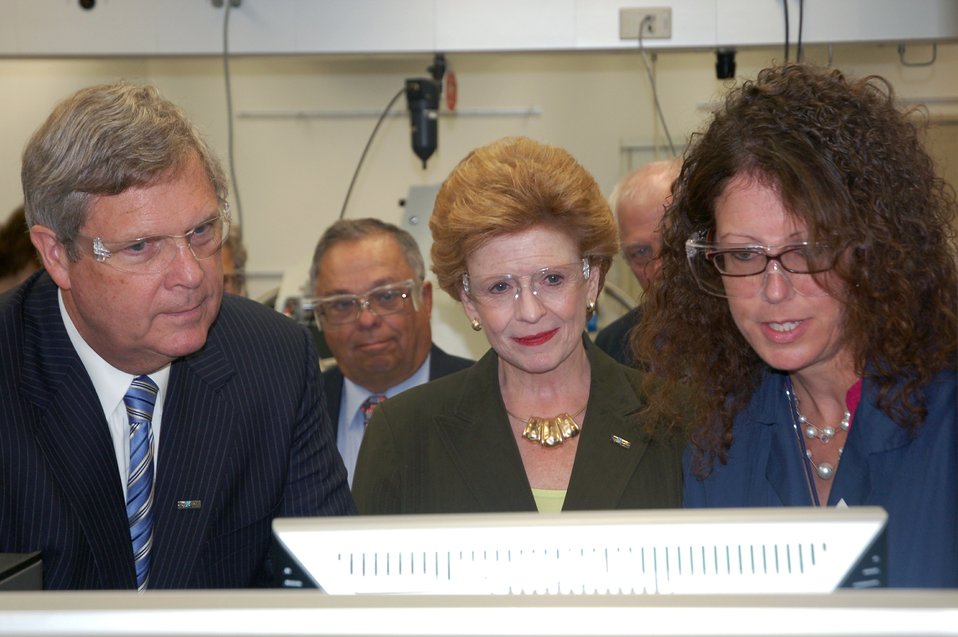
Agriculture Secretary Tom Vilsack (left) and Michigan Senator Debbie Stabenow (middle), and Ford technician Laura Beyer look over a display from test done on rubber samples made from soybean bio-based products in Dearborne, MI on Tuesday, August 7, 2012. Secretary Vilsack was in Michigan to discuss statewide economic growth opportunities in the bio-based manufacturing industry in Michigan.